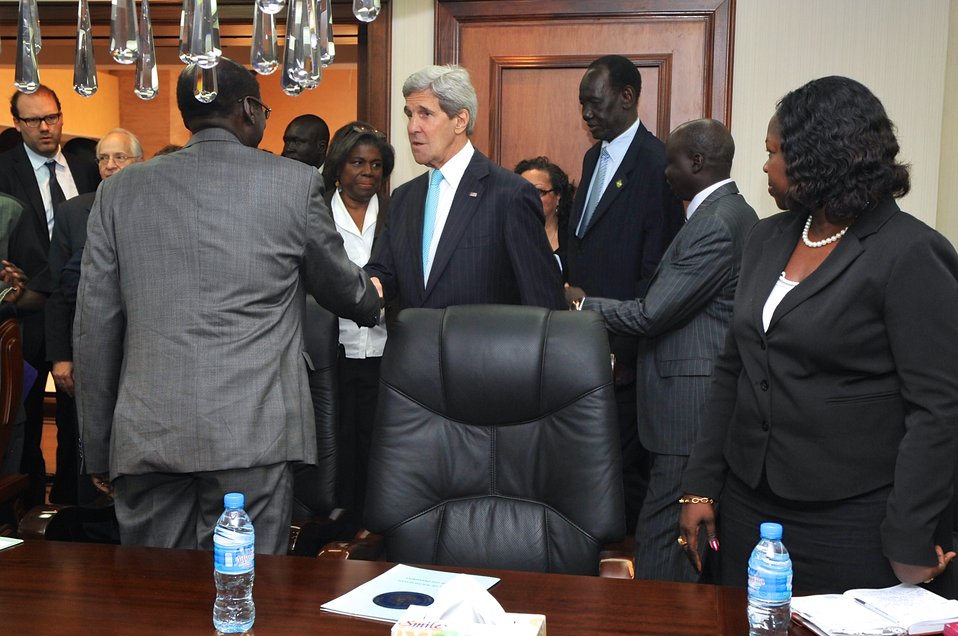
Secretary Kerry is Greeted by Members of South Sudanese President Kiir's Staff Before Meeting in Juba

U.S. Secretary of State John Kerry is greeted by staff members before a meeting with South Sudanese President Salva Kiir Mayardit in Juba on May 2, 2014.